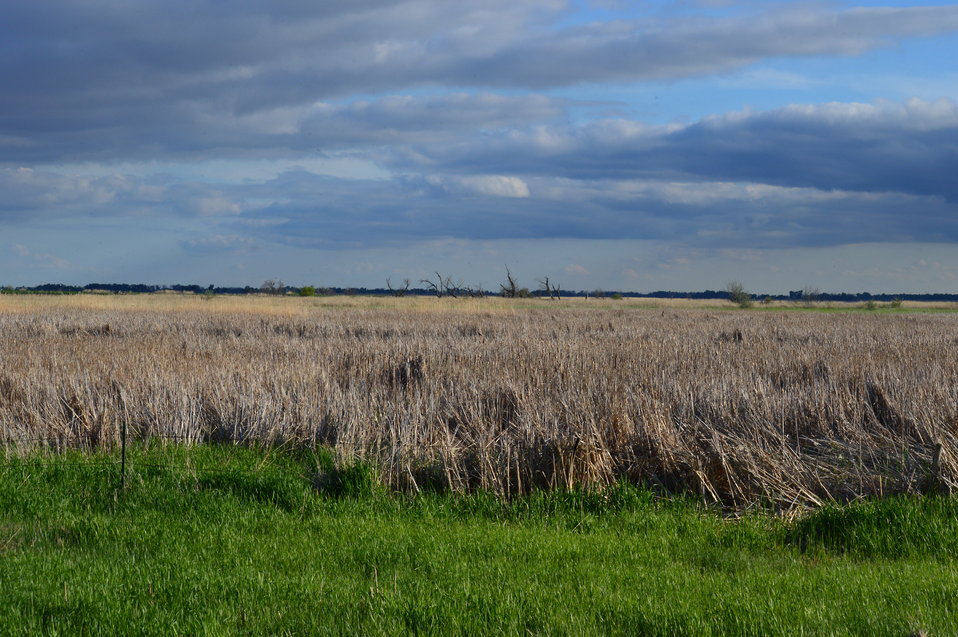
Grass and brush at Sand Lake NWR

Scenery and wildlife at Sand Lake National Wildlife Refuge in South Dakota